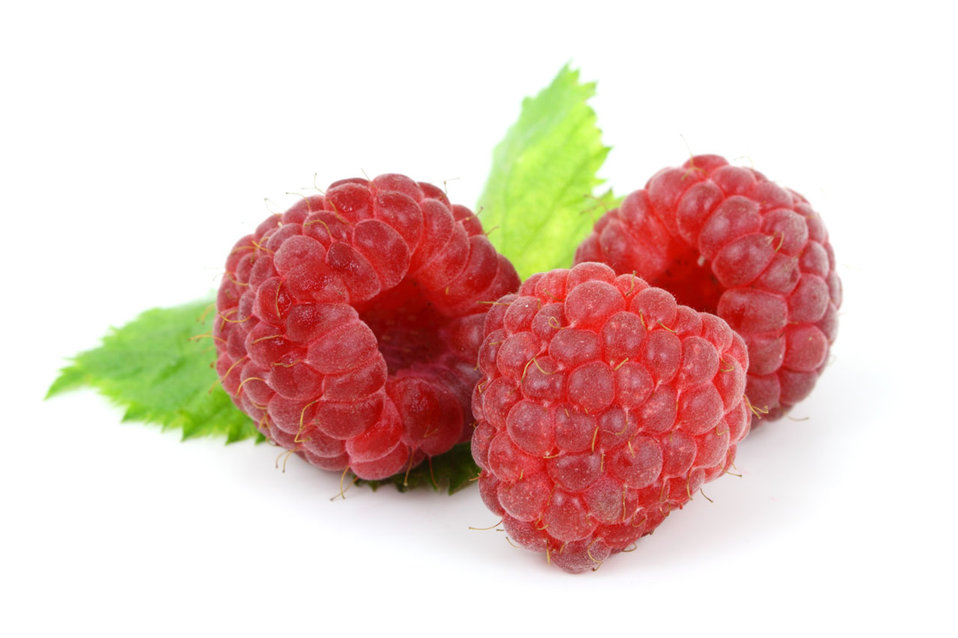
Raspberry

Fresh raspberry isolated on white background.